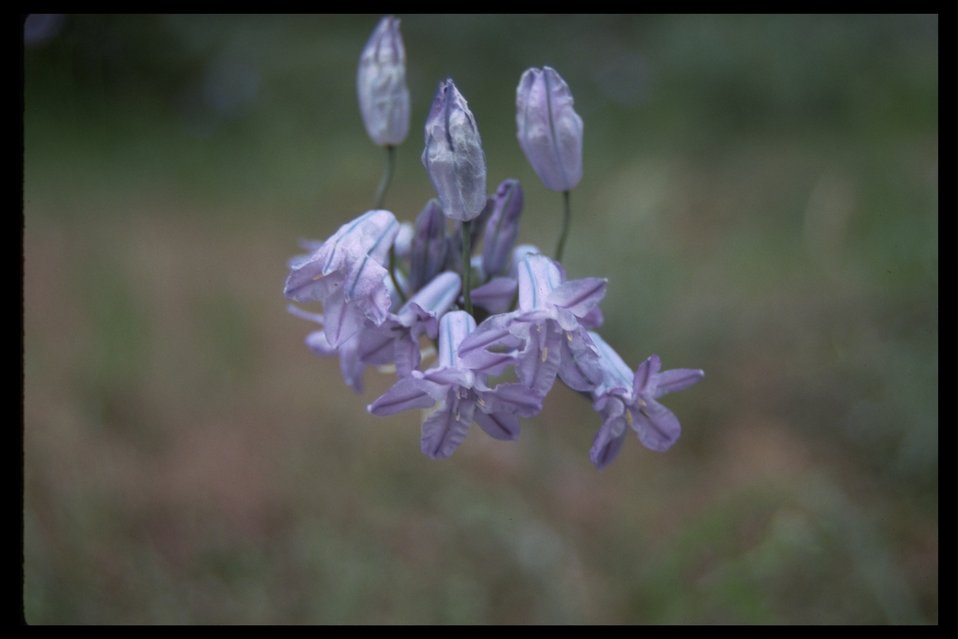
A native Lily in the Stonehouse WSA. (WSA 2-23C)